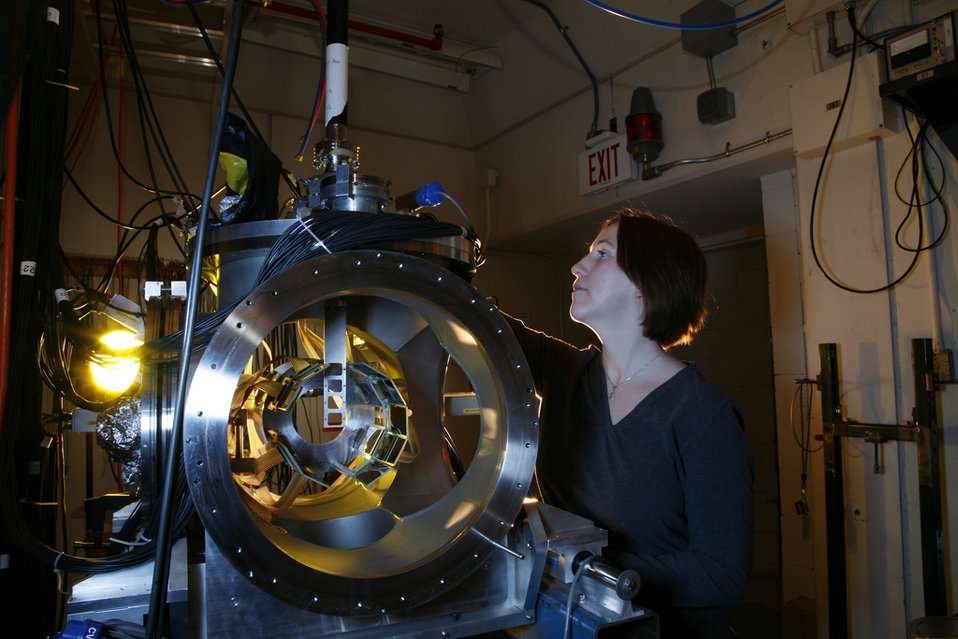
The Oak Ridge Rutgers University barrel array helps researchers like Kelly Chipps examine the products of nuclear reactions that are of interest in the study of astrophysics.

The array has recently been used in several high-profile experiments with radioactive beams at Holifield Radioactive Ion Beam Facility at Oak Ridge National Laboratory.